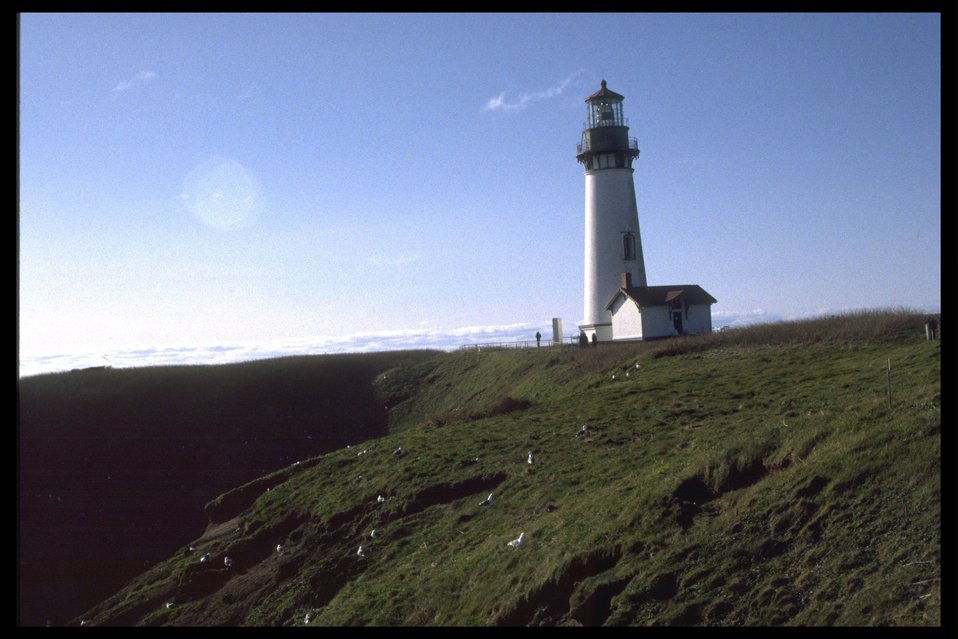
Yaquina Head Lighthouse.